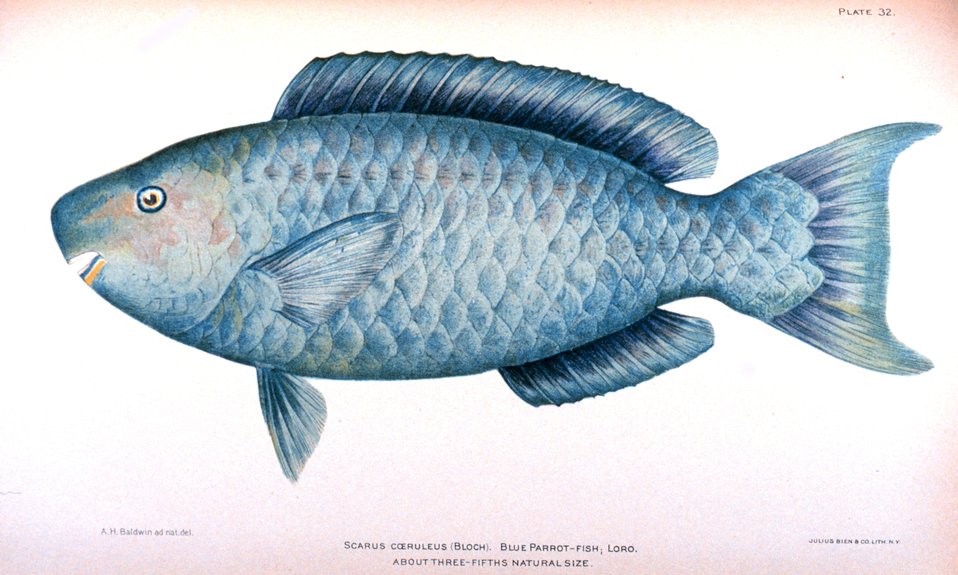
Scarus coeruleus (Bloch). Blue Parrot-fish; Loro. In: 'The Fishes of Porto Rico', by Barton Warren Evermann and Millard Caleb Marsh. Bulletin of the United States Fish Commission, Vol. XX for 1900. First Part. P. 350, Plate 32.